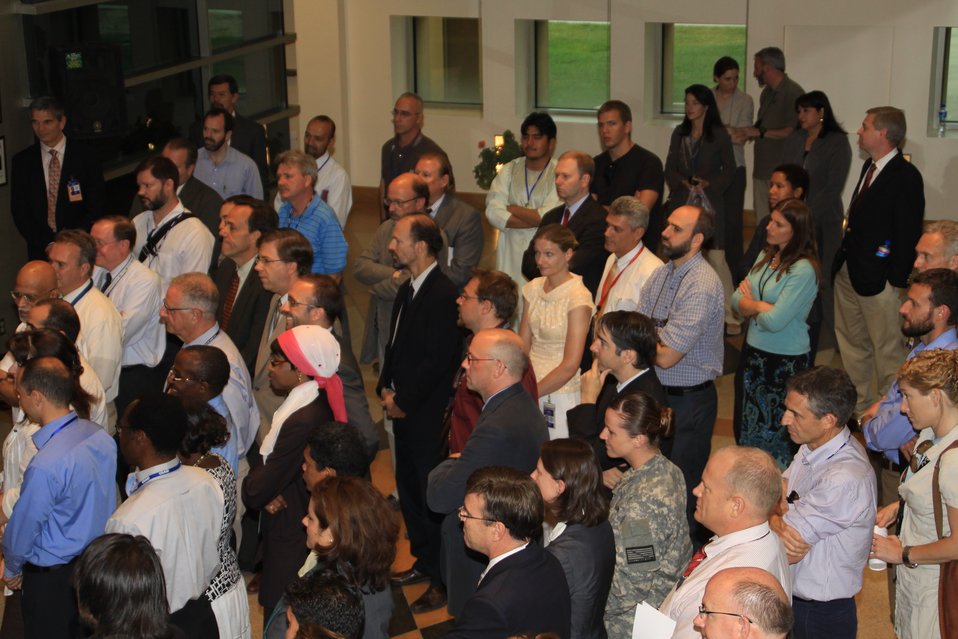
US Embassy Town Hall July 21, 2010